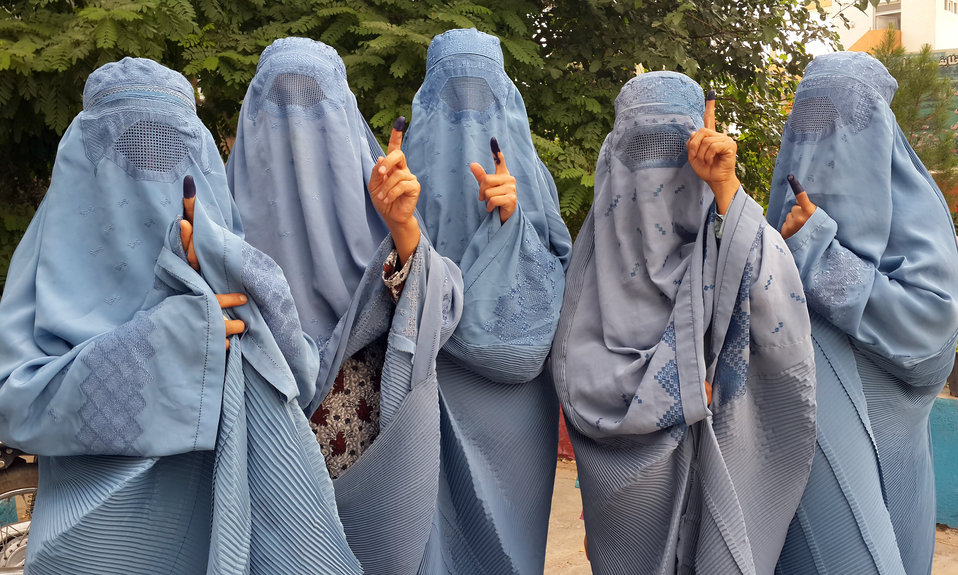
Women show inked fingers after voting in Herat. Afghan law requires a voter to dip his or her finger in indelible ink before receiving a ballot, to help prevent election fraud. A voter’s fingers must be ink-free, in order to receive a ballot.